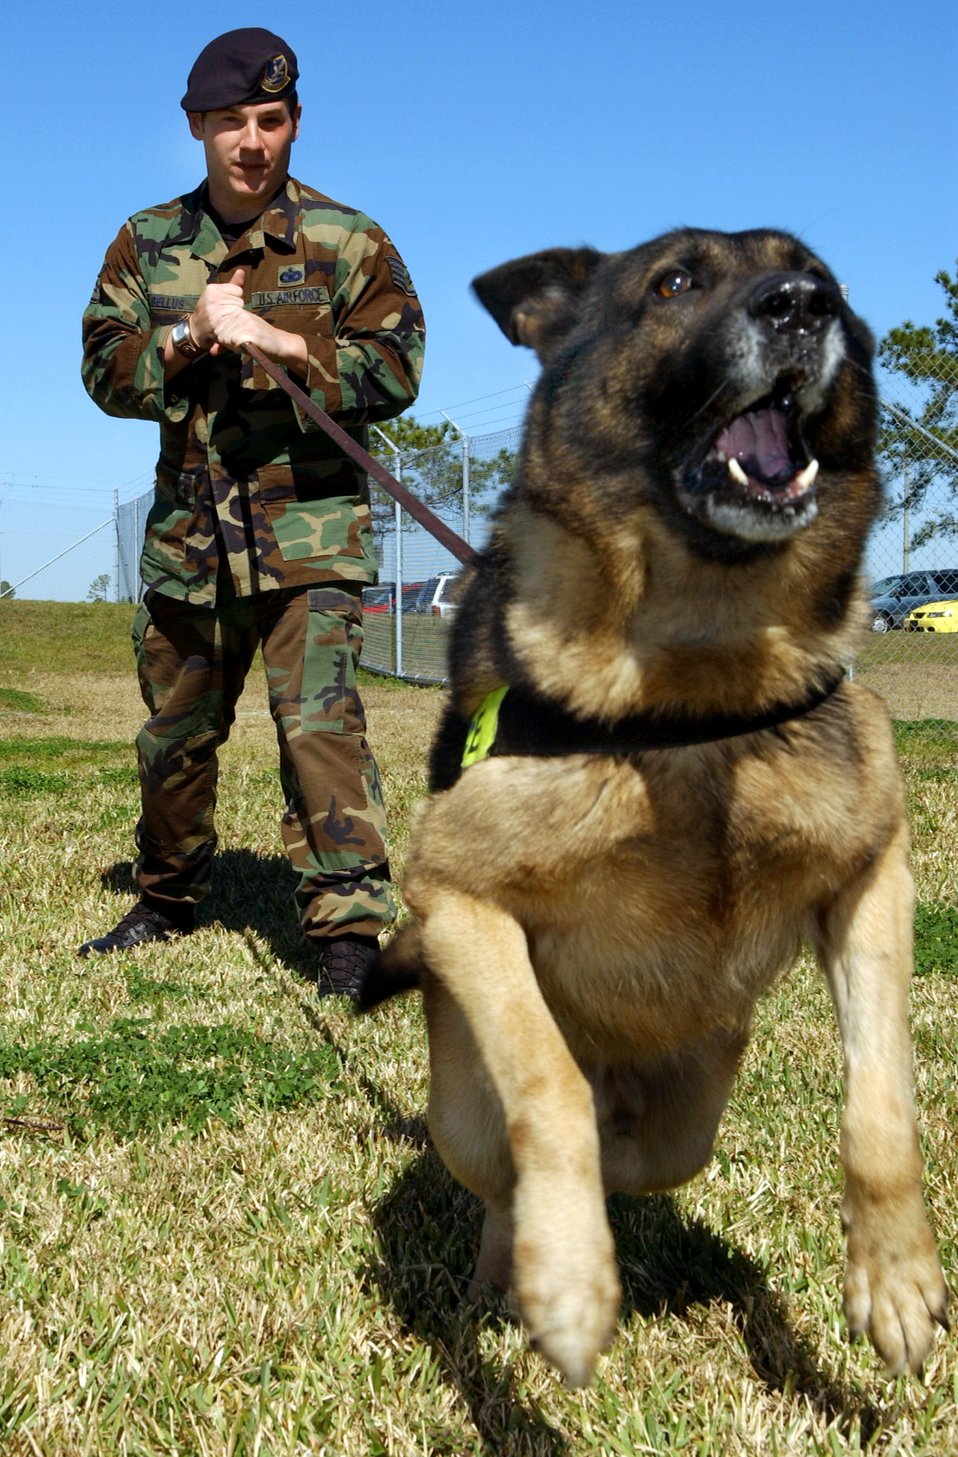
For the dogs

MACDILL AIR FORCE BASE, Fla. -- Staff Sgt. Timothy Bellus restrains his military working dog, Manzo, here Jan. 31. Manzo is a detection patrol dog. Sergeant Bellus is a military working dog handler with the 6th Security Forces Squadron.